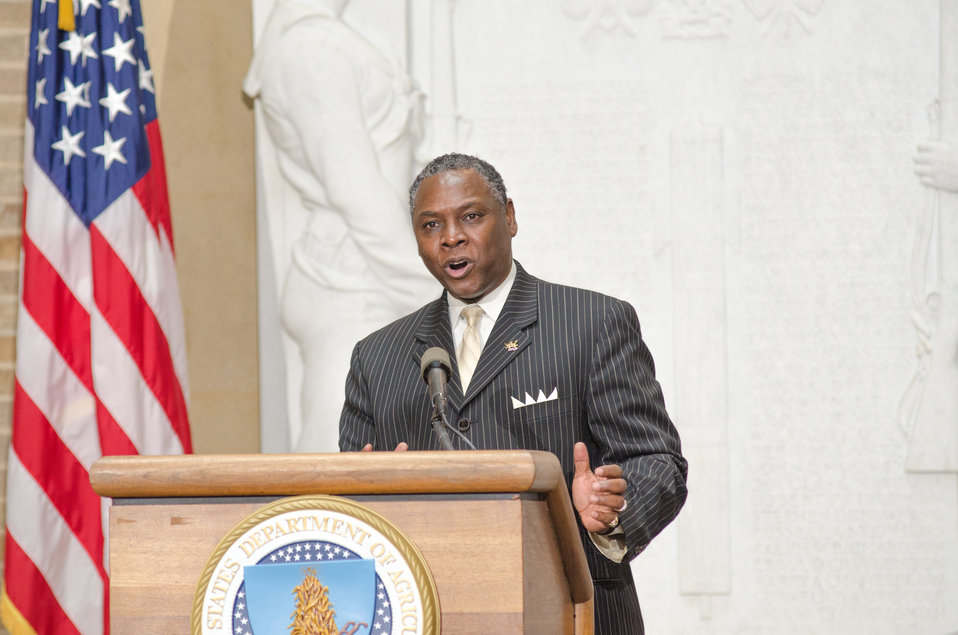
U.S. Department of Agriculture’s (USDA) Combined Federal Campaign (CFC) Co-Manager Arthur Bryant is the Master of Ceremonies for the 2012 Combined Federal Campaign Awards Ceremony, Thursday, Mar. 21, 2013, in the USDA Whitten Building Patio, Washington D.C.